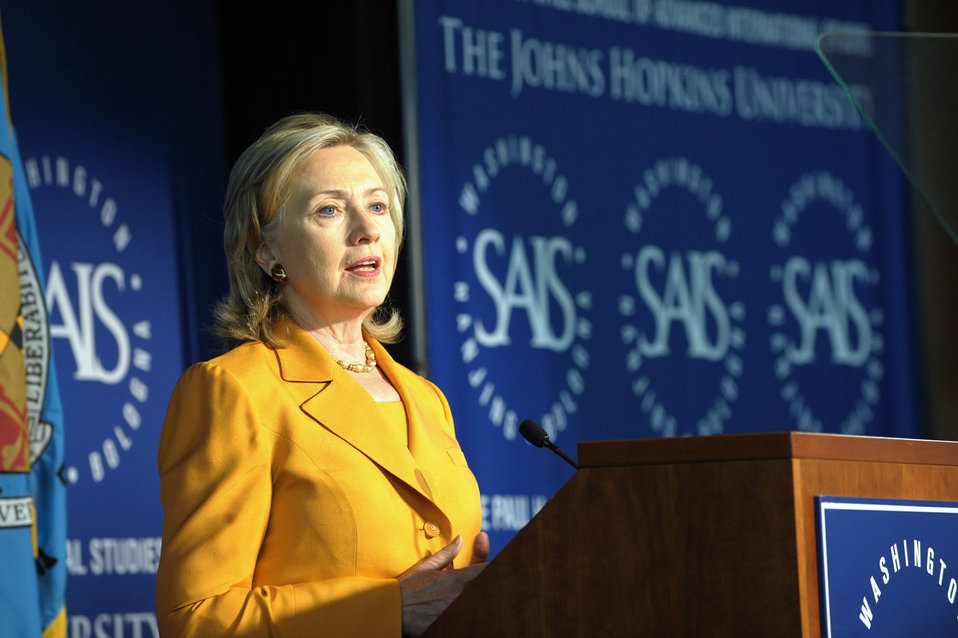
Secretary Clinton Delivers Remarks on the Global Health Initiative at John Hopkins School of Advanced International Studies

U.S. Secretary of State Hillary Rodham Clinton delivers speech on Global Health, at Johns Hopkins School of Advanced International Studies (SAIS) in Washington, D.C., on August 16, 2010.